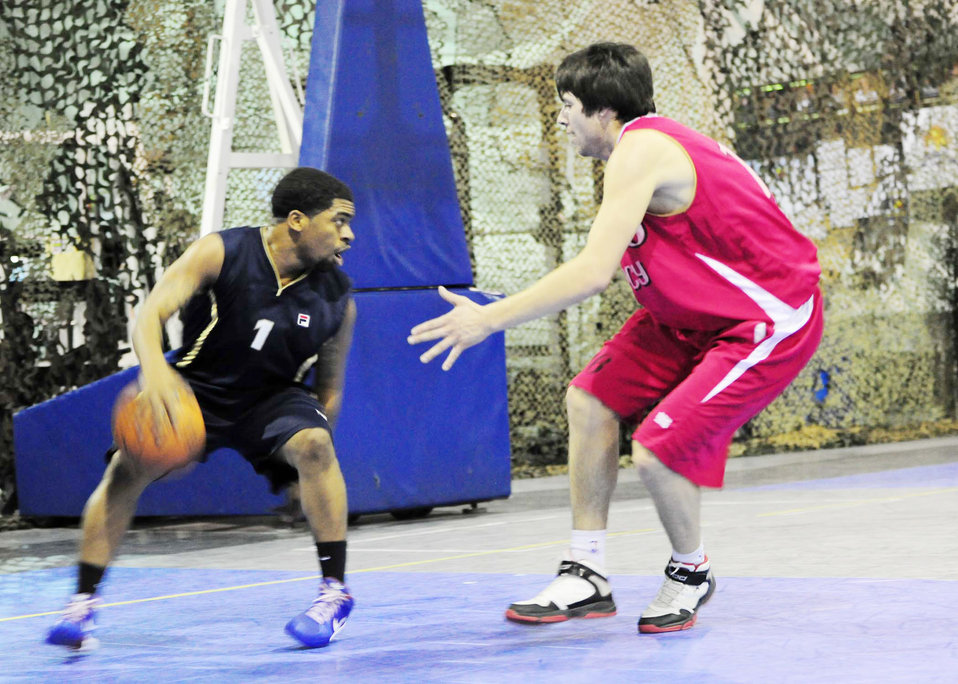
Transit Center Airmen compete against Kyrgyz in basketball game

Brandon Boswell dribbles the ball down the court in attempt to break down a Kyrgyz Russian Slavic University basketball player's defense during a game Jan. 5, 2010, at the Transit Center at Manas. Boswell is a point guard for Transit Center at Manas basketball team. He is a communications security contractor for the 376th Expeditionary Communications Squadron.